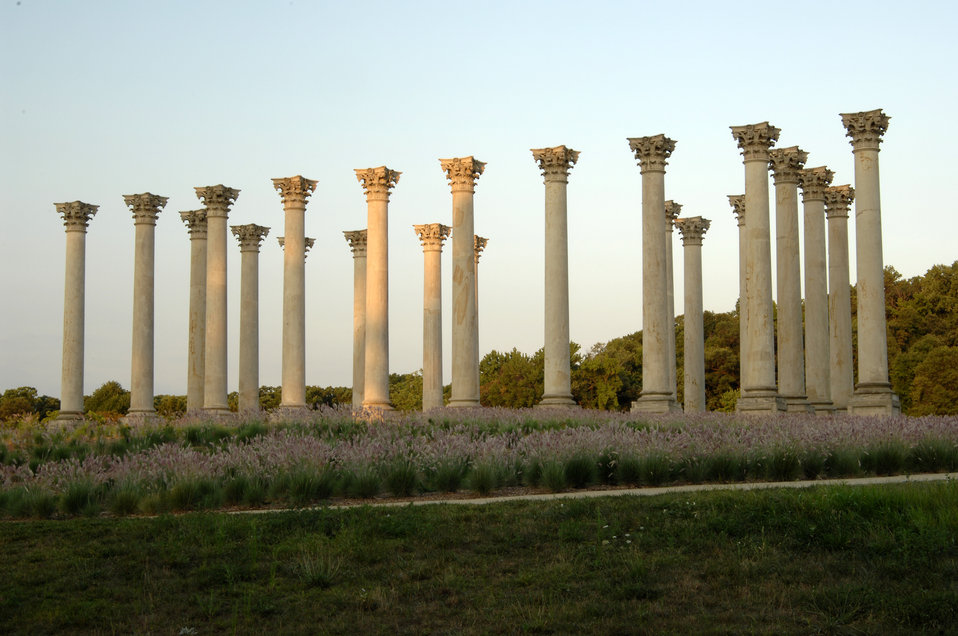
The National Capital Columns at the U.S. National Arboretum are a well-known landmark in Washington, D.C., The columns originally were intended for the East Portico of the Capital in 1828 but due to an oversight in design and construction of the Capital dome in 1958 the columns were removed. The U.S. National Columns were moved to the National Arboretum in the 1980s.